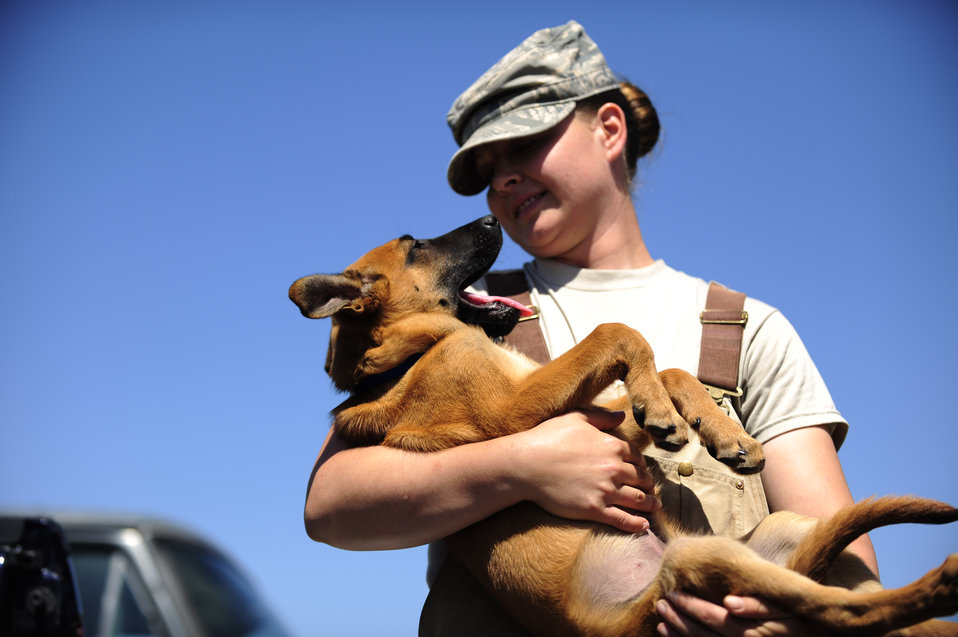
Department of Defense Military Working Dog schoolhouse officials outline adoption process

Staff Sgt. Christa Quam holds her puppy which will enter the military working dog program in a year at Lackland Air Force Base, Texas. MWDs are enrolled in a 60- to 90-day training program where they are taught to detect explosives and drugs. They are also taught deterrence training and how to protect their handler. Sergeant Quam is assigned to the 341st Training Squadron at Lackland AFB.